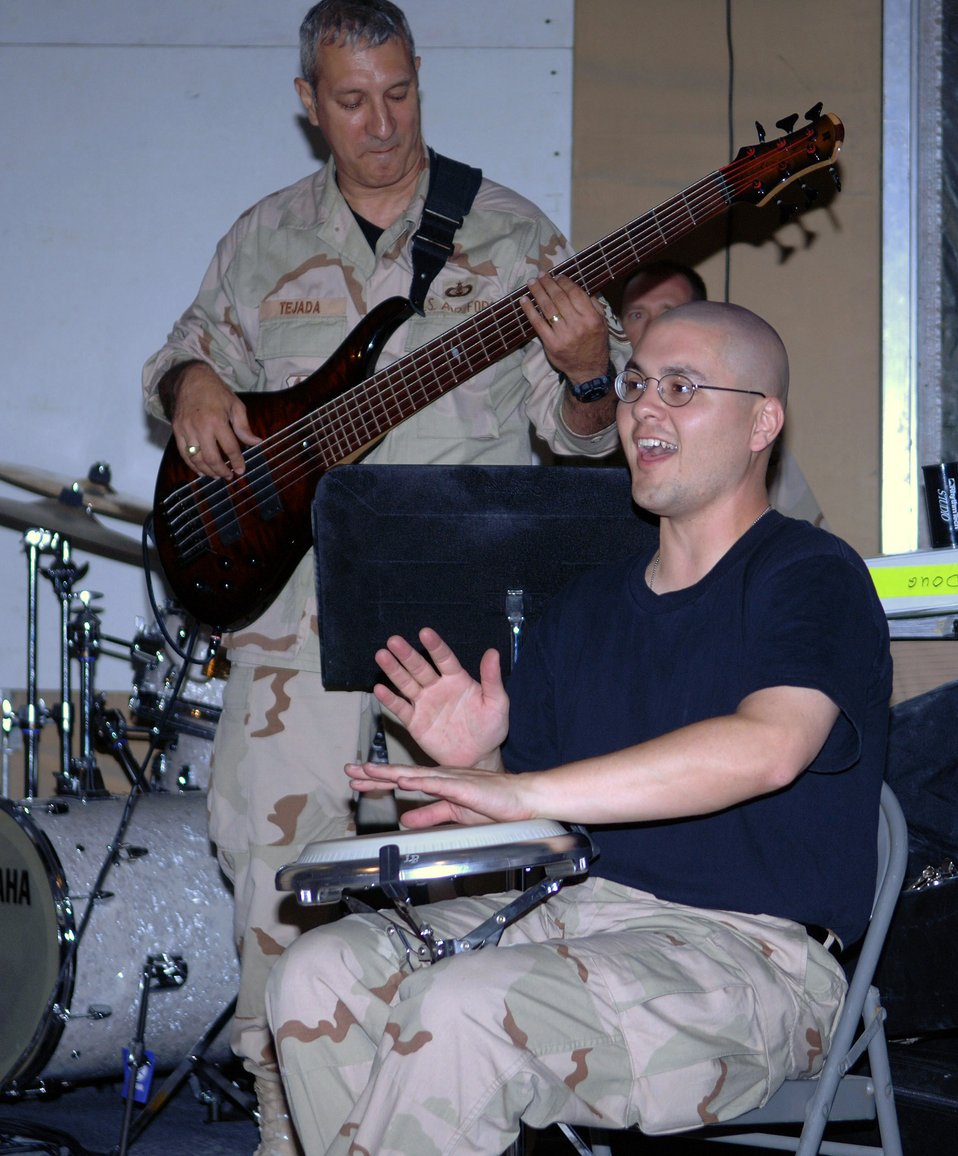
CENTAF Band performs unscheduled concert at Bagram

Tech. Sgt. Doug Tejada (background) and Staff Sgt. Timothy Shaw get into the groove as the band played some salsa music during an impromptu performance June 19 at Bagram Air Base, Afghanistan. The U.S. Central Command Air Forces Band played for the Airmen of the 455th Air Expeditionary Wing in the recreation tent at Camp Cunningham. Sergeant Tejada is a bass player and Sergeant Shaw is the band percussionist.